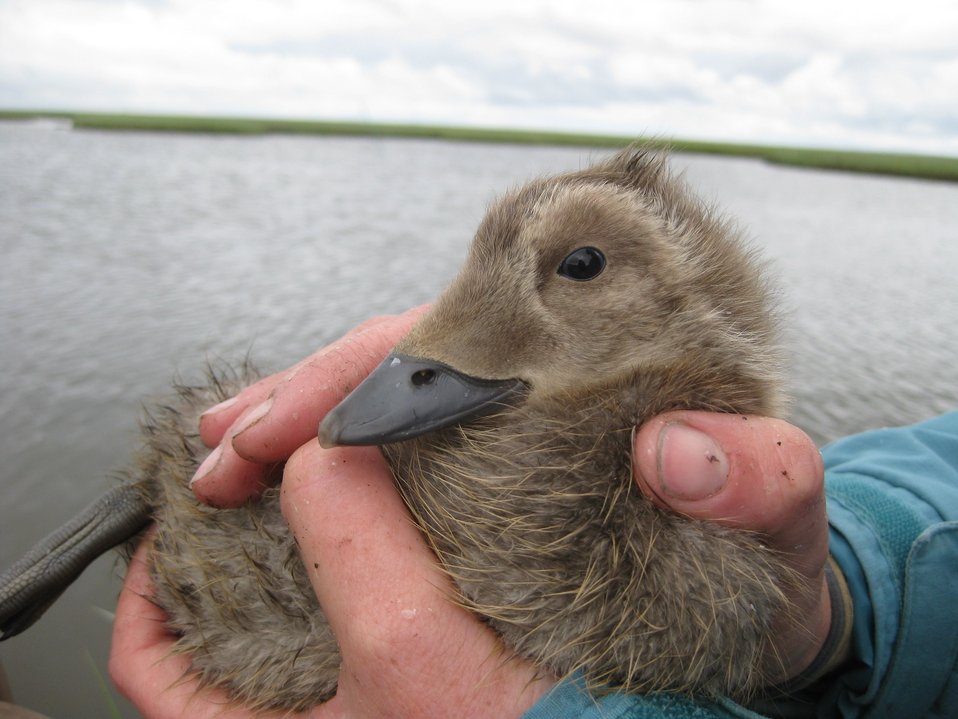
Cute ball of feathers

This spectacled eider duckling was captured during a banding event that involved trapping spectacled eider broods. Researchers documented duckling weights and other morphological measurements that will be used to analyze growth rates in the species. This duckling was a female that was given a USFWS metal band and a uniquely coded tarsal band.

USFWS Yukon Delta NWR